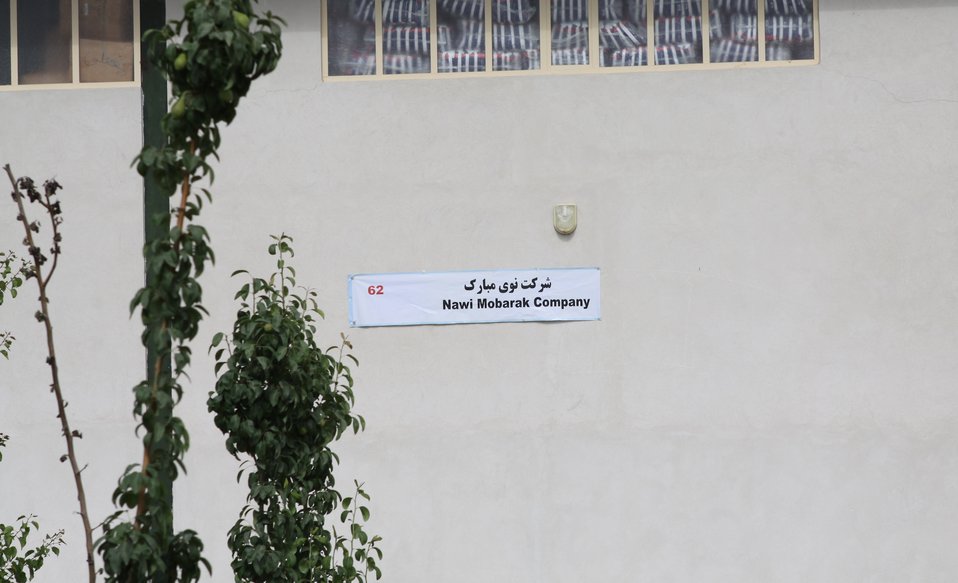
100525 Hirat Marble Conference 796